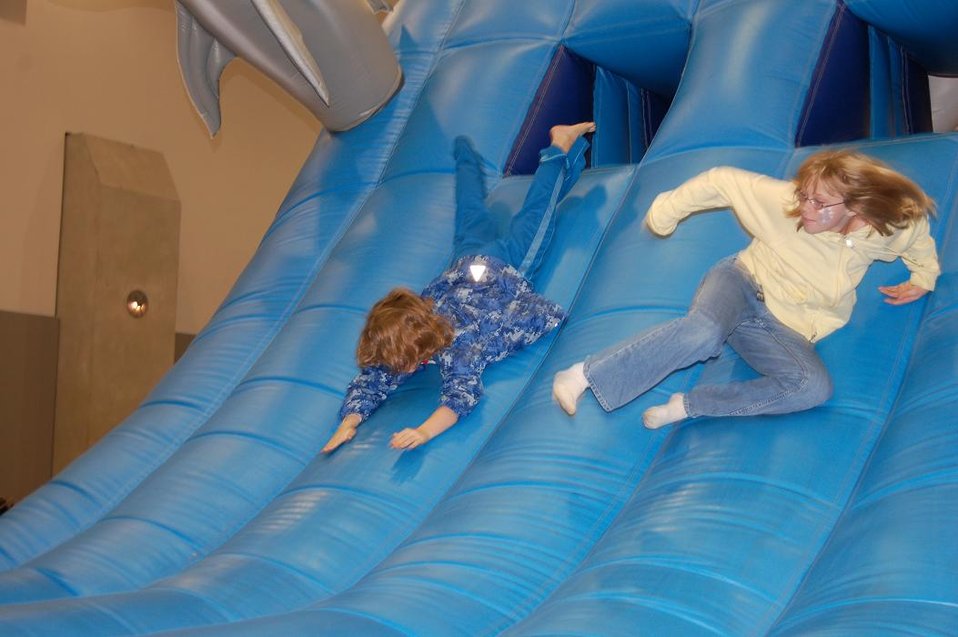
Children play

Two children enjoy activities in the kid's zone at the Oakley Party Dec. 16. The party took place during the second day of the four-day Snowball Express event. The Snowball Express final two day will include a trip to Disneyland and tickets to an Anaheim Ducks game.